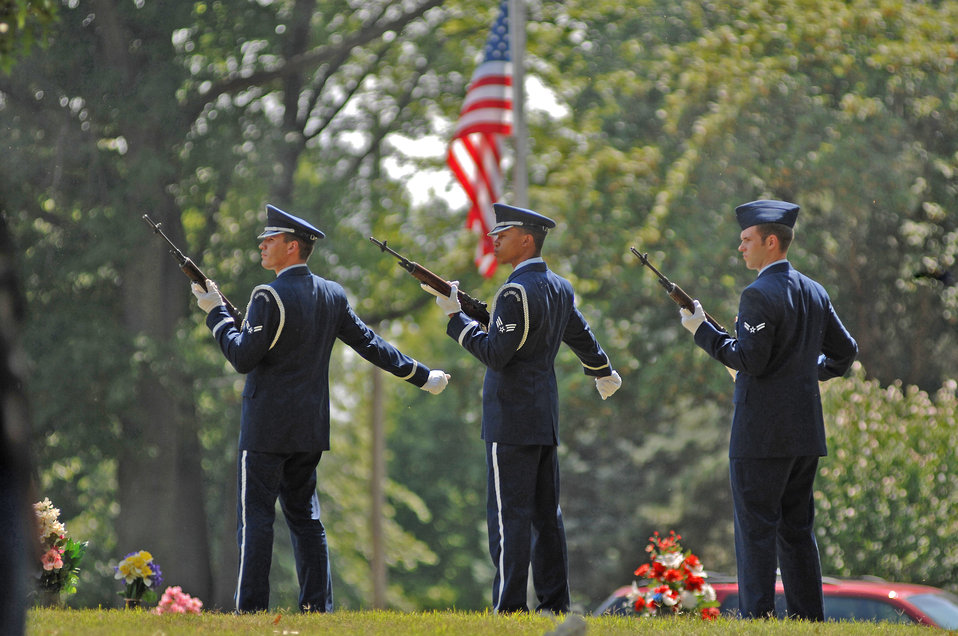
War hero brought home, laid to rest after 30 years MIA

Airmen with the Whiteman Air Force Base Honor guard render a 21-gun salute July 27 to honor Chief Master Sgt. Quincy Adam at Chapel Hill Memorial Cemetery. Chief Adam is a Vietnam War veteran who was missing in action for more than 40 years. Chief Adam's remains were discovered in Southeast Asia and he was finally brought home to be laid to rest, giving his family closure in their lives.